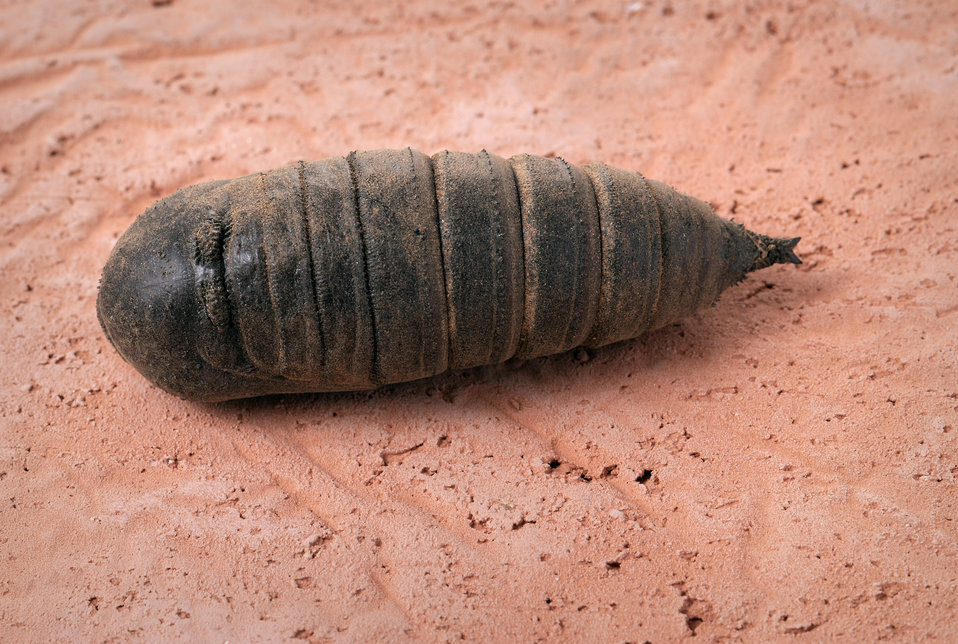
This 2008 image depicts a ventral view, i.e., from below, of a Regal Moth, Citheronia regalis pupa.